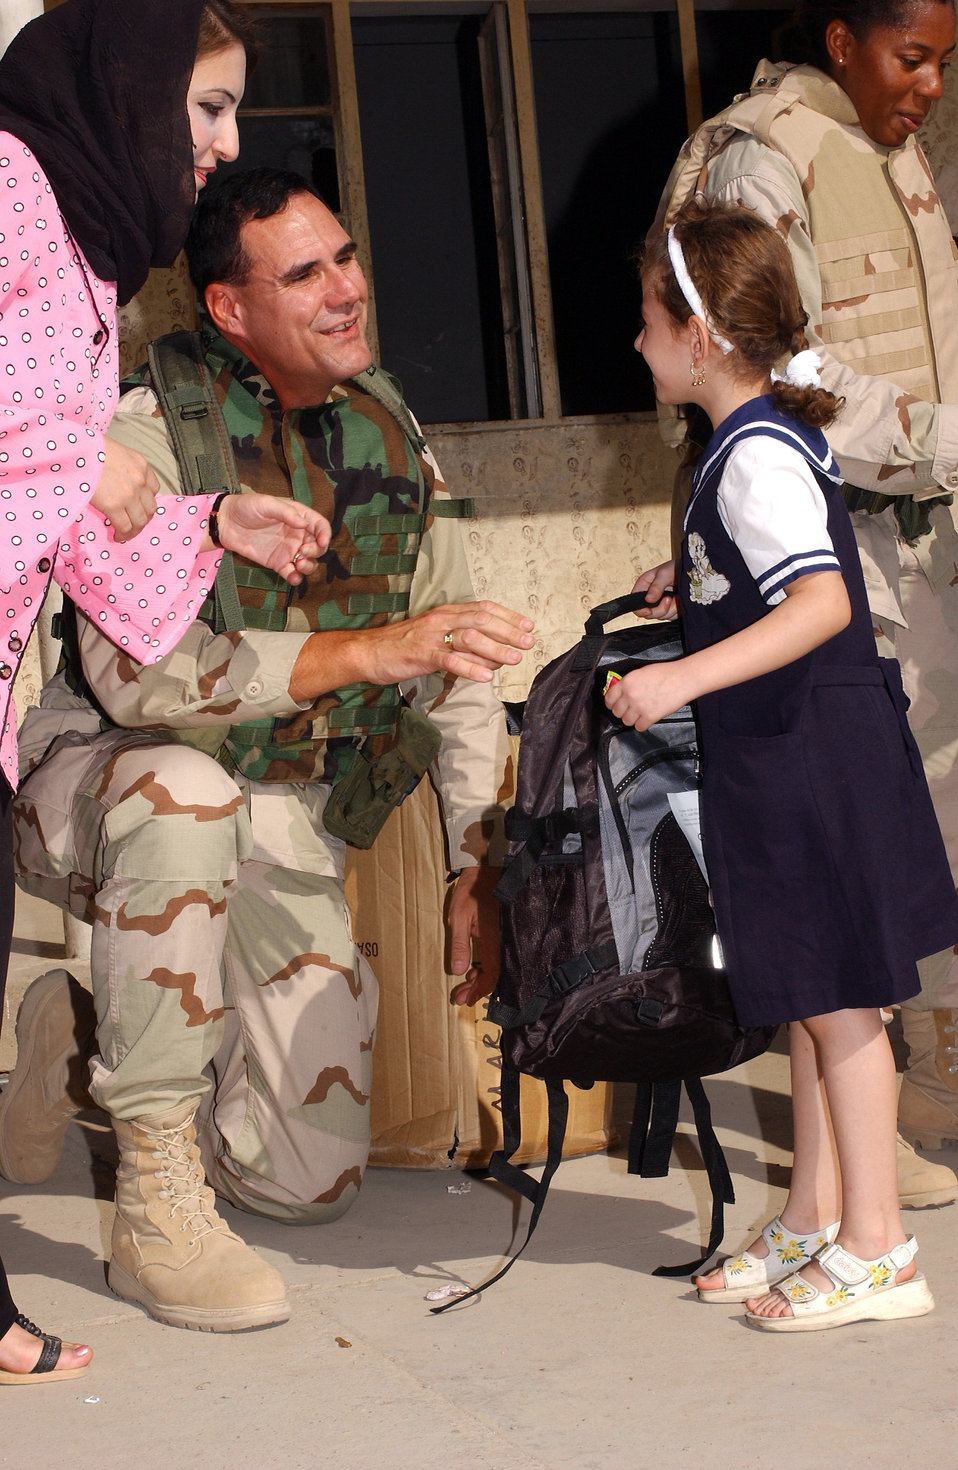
School donation

KIRKUK, Iraq -- Col. Steven Johnson passes out school supplies to children at a school here Oct. 22. Airmen from the 380th Air Expeditionary Wing traveled from a forward-deployed air base to donate more than $5,000 of supplies to schools here. Johnson is the commander of the 380th Expeditionary Mission Support Group.